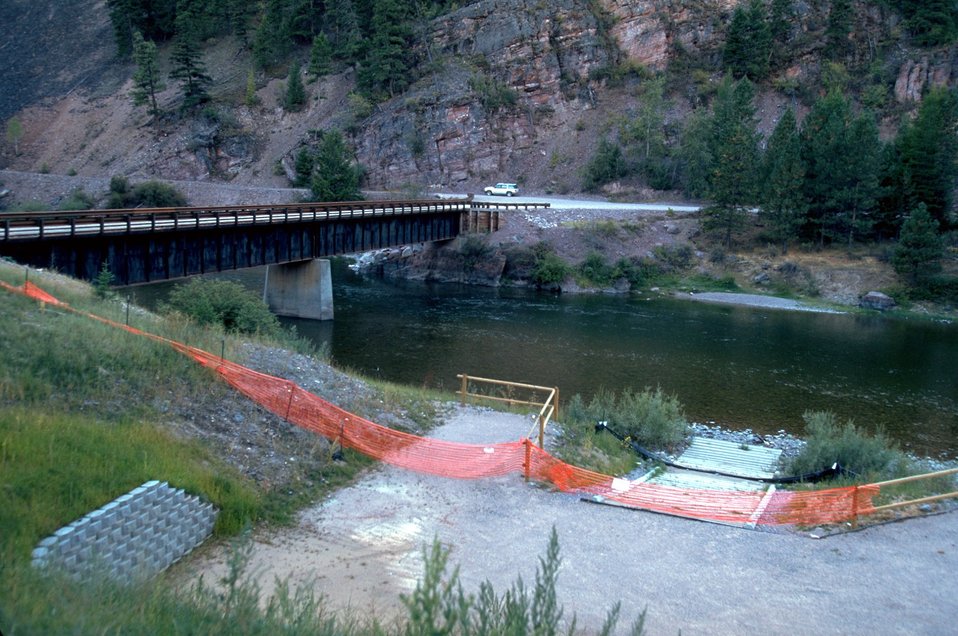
Whitaker Bridge and boat launch on Blackfoot River